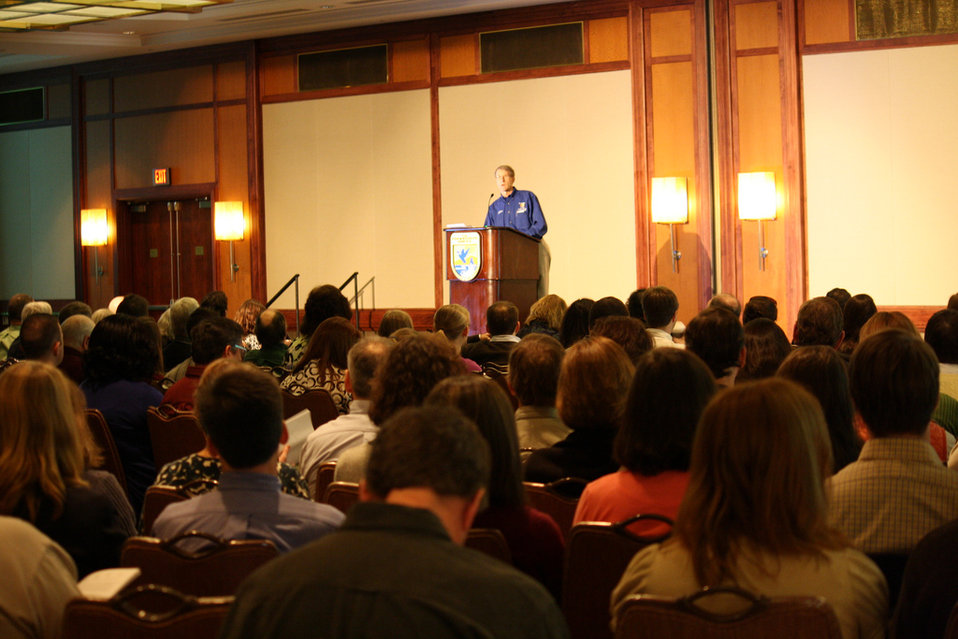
Marvin Moriarty, Regional Director

Marvin Moriarty, Northeast Regional Director, addressing attendees at the Northeast Region Biologists Conference.